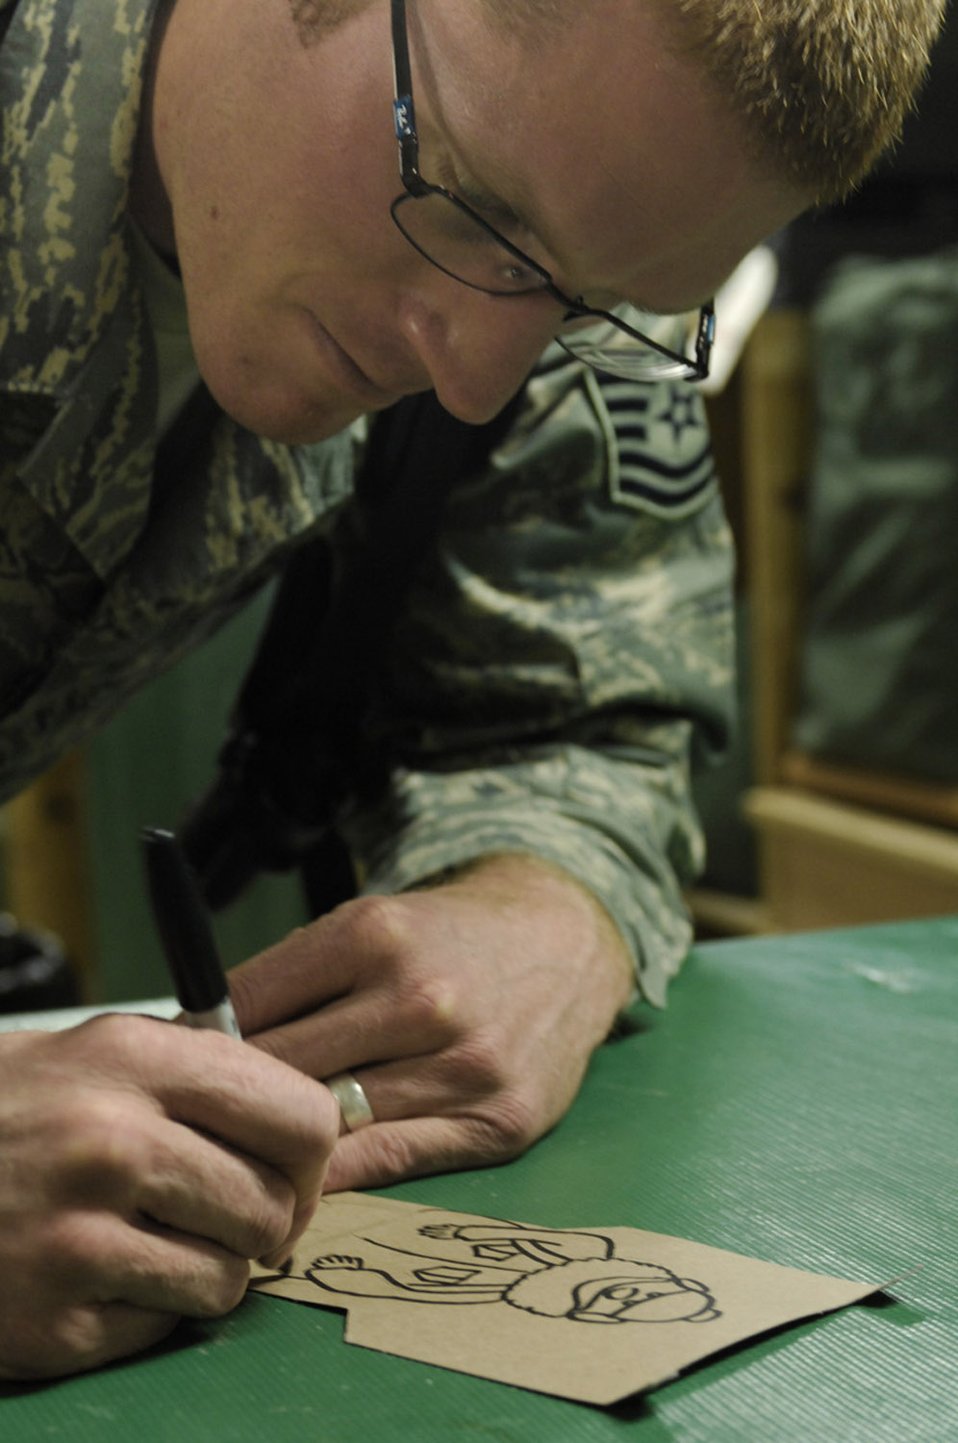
Holiday spirit in Afghanistan

Tech. Sgt. Ryan McMaster draws cartoon characters for a holiday diorama he created from locally-procured materials Dec. 14 at Bagram Air Base, Afghanistan. Sergeant McMaster is an aircrew life support technician with the 774th Expeditionary Airlift Squadron.